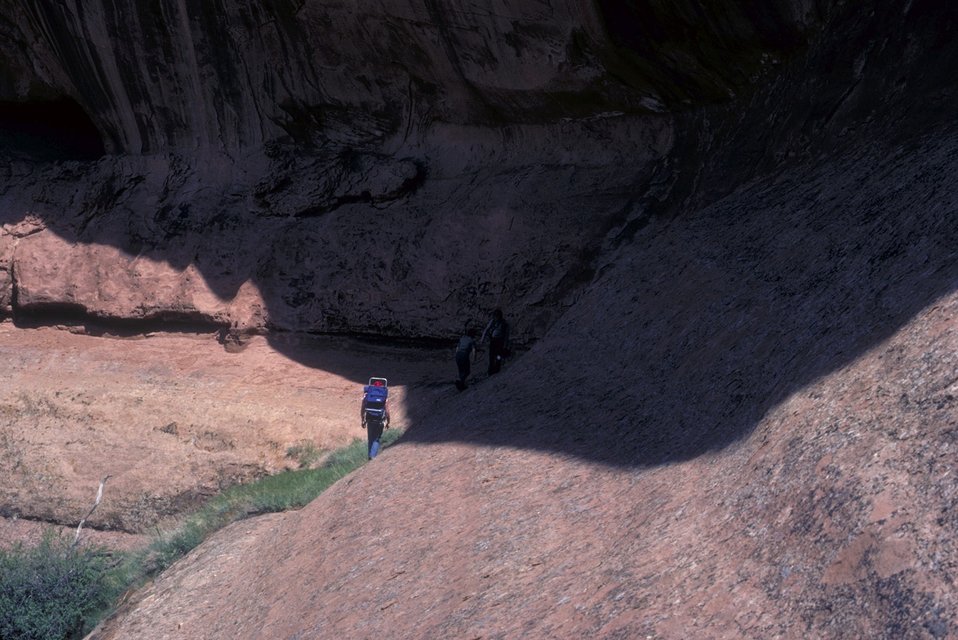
Hiking on slickrock.